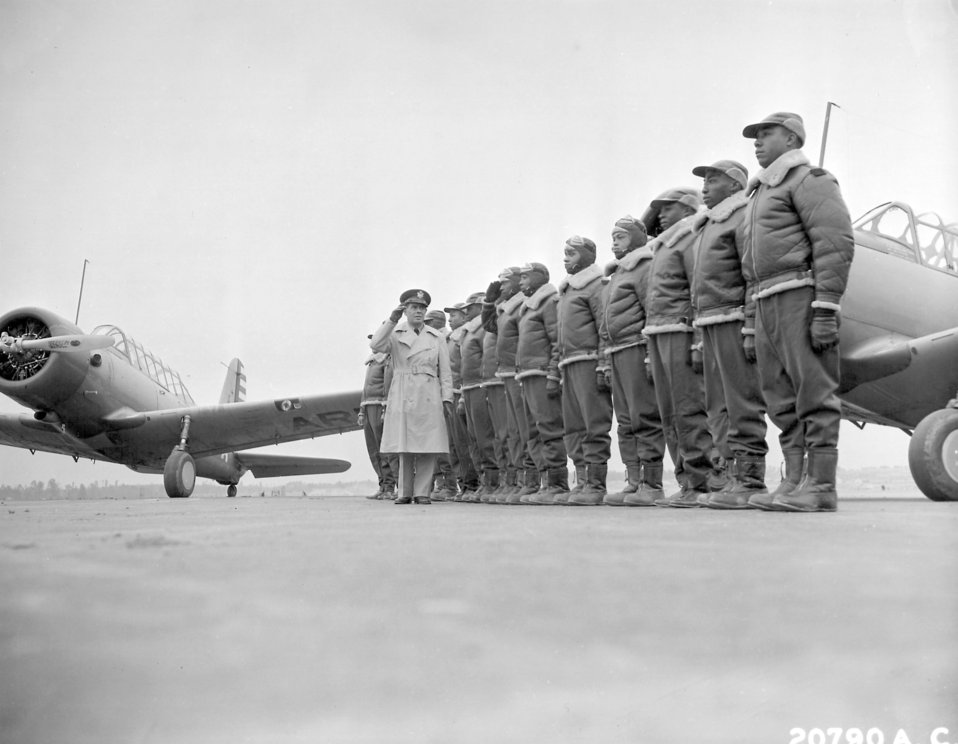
Tuskegee Airmen leave strong legacy

TUSKEGEE, Ala. -- Maj. James A. Ellison returns the salute of Mac Ross as he passes down the line during review of the first class of Tuskegee cadets.